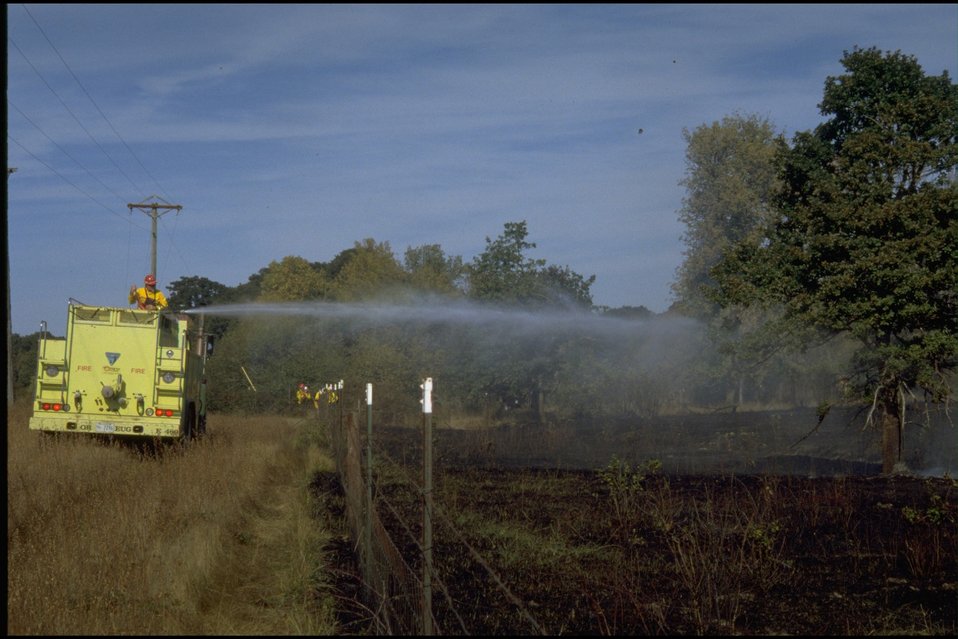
Long Tom ACEC Burn.